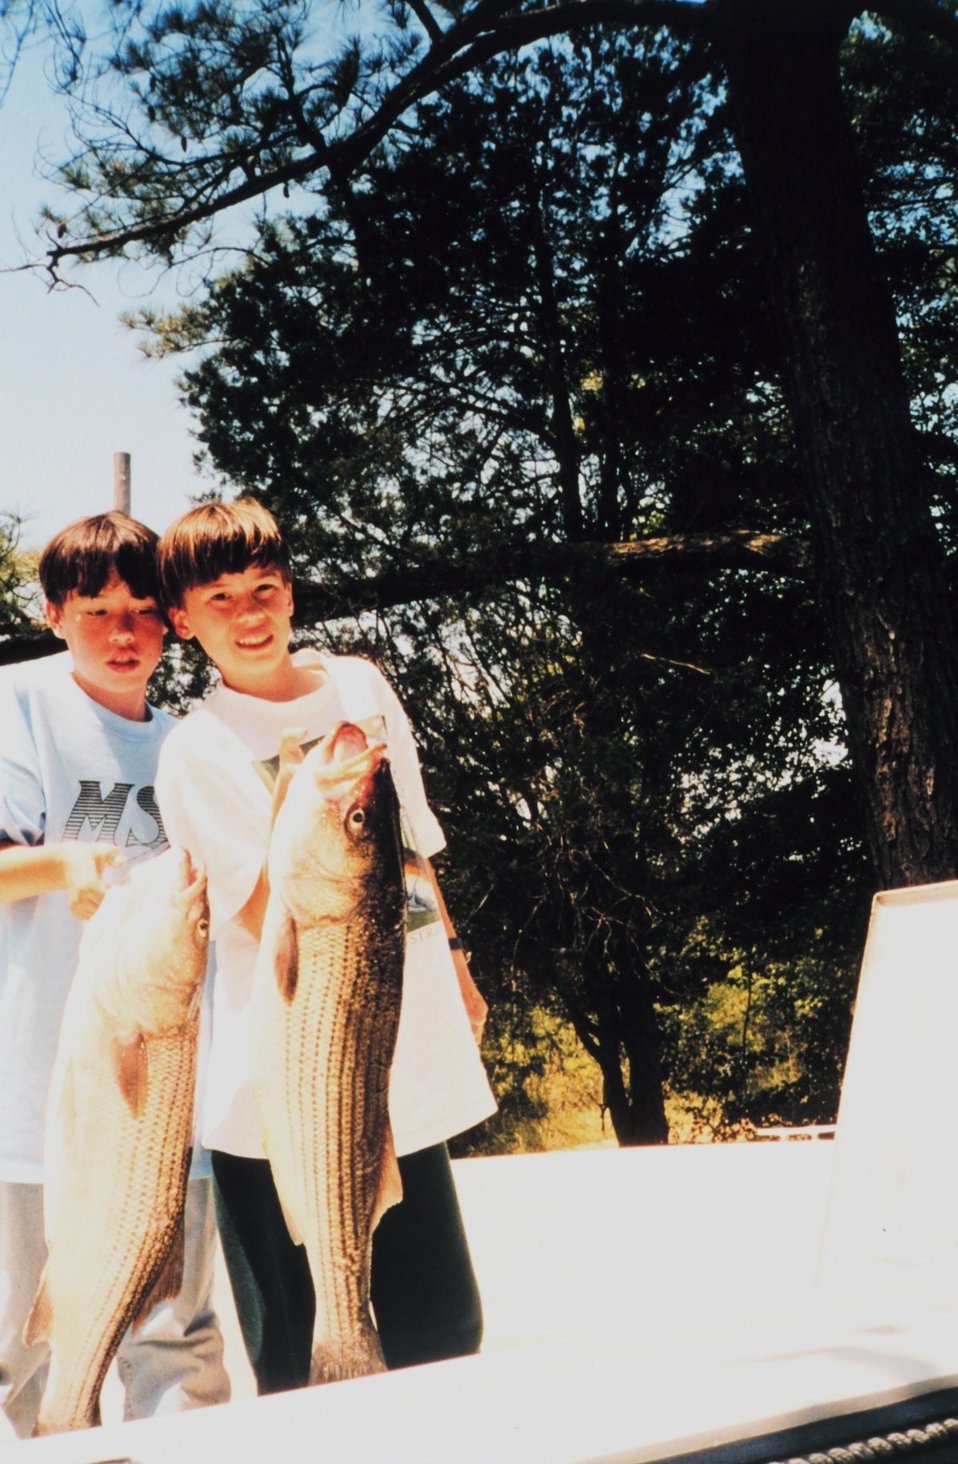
Old rockfish ( striped bass) caught by young fishermen.